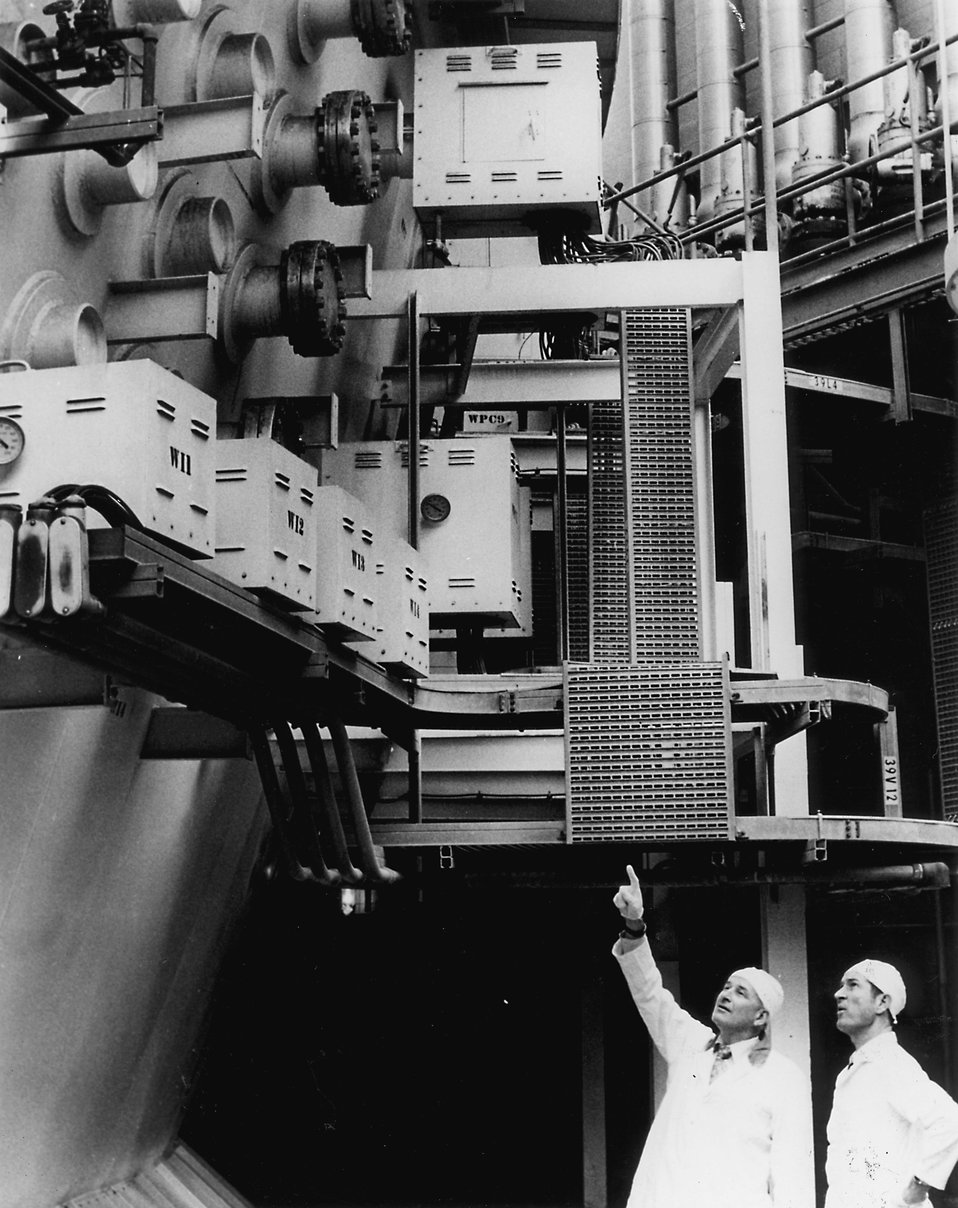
AEC inspections continue after a reactor plant goes into operation. An inspector, accompanied by a facility operations supervisor at Unit-1 of the San Onofre (Calif.) Circa 1973.